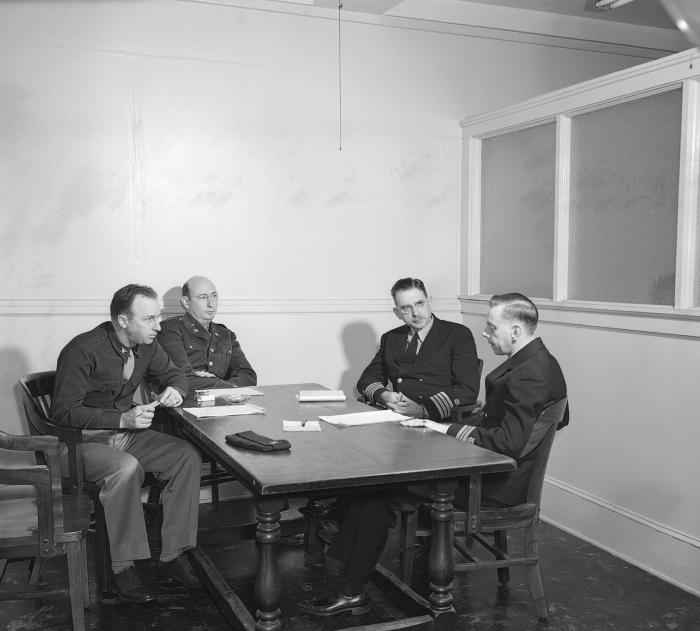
This historic 1945 image depicted a meeting between Dr. Joseph Mountin (second from right), Dr. Seward E. Miller (far right), Dr. Hollis (far left), and Dr. Boyd (second from left).